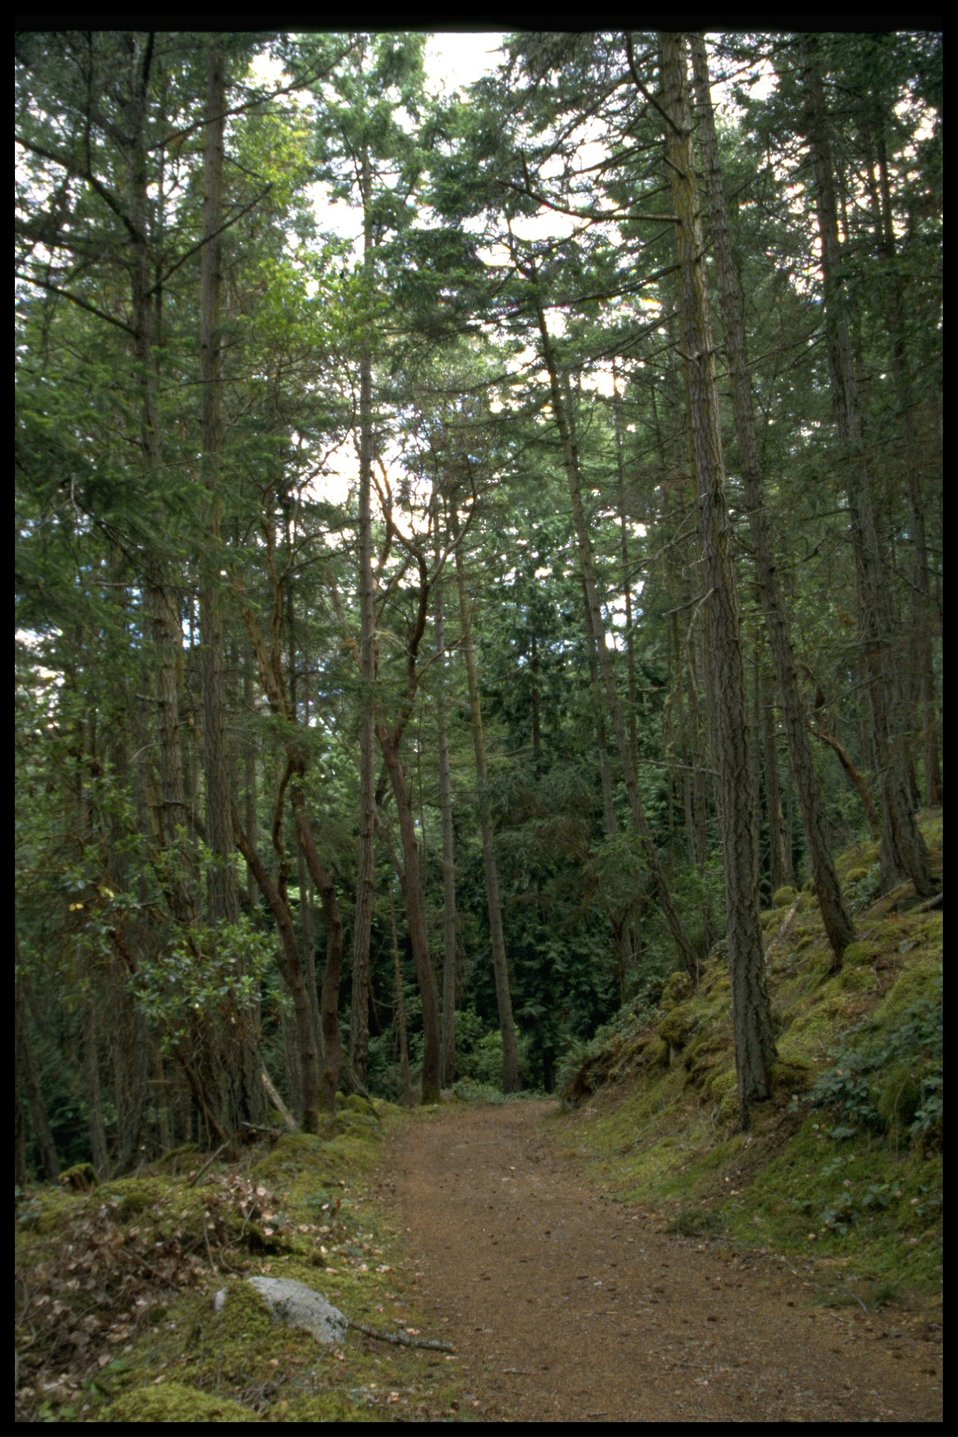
Path leading up to view point at Turn Point.